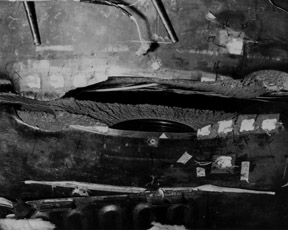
Photograph (three of three) of a water-cooled reactor vessel model that was deliberately flawed and then put under pressure to the point of failure to obtain data. c. 1973